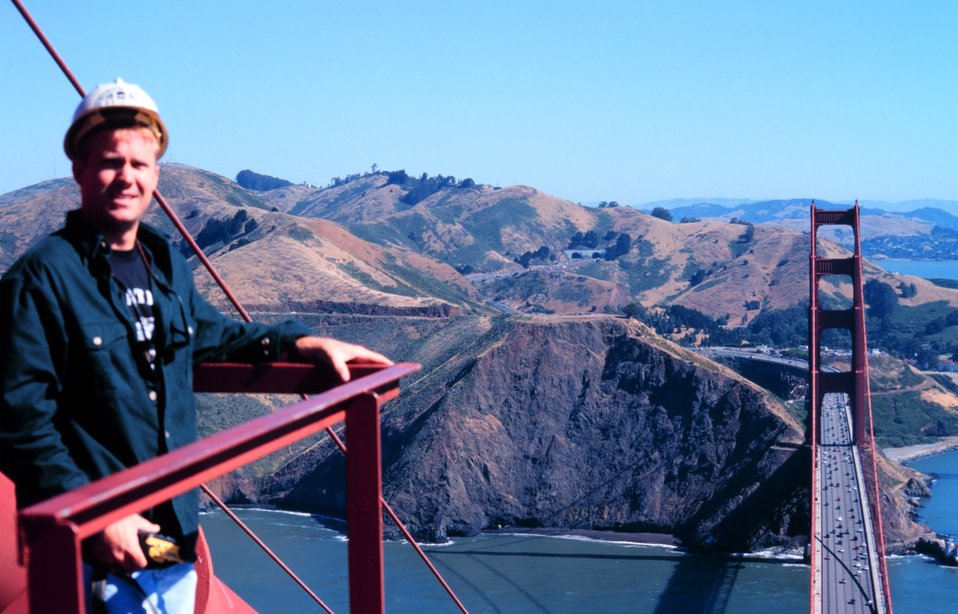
Richard Bourgerie of the NOAA NOS CO-OPS office atop the south tower of the Golden Gate Bridge on a glorious fall day.